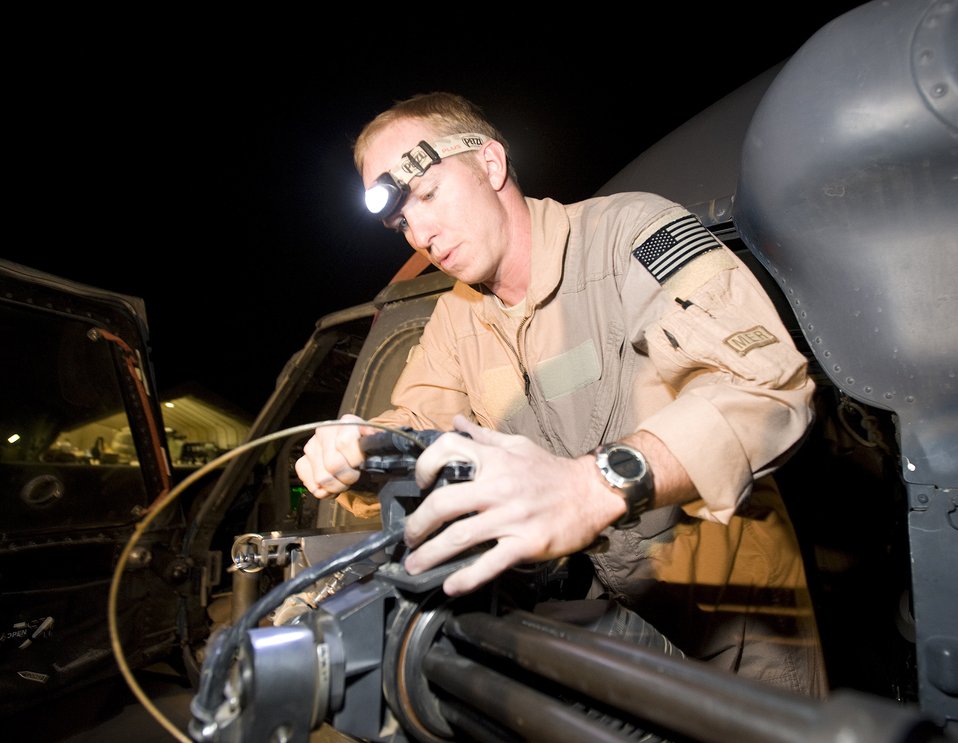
Airmen enhance Army medical evacuation mission

Staff Sgt. Sean Loose performs preflight inspections on an HH-60 Pave Hawk's mini-guns before his shift on alert Aug. 14 at Kandahar Air Base, Afghanistan. Sergeant Loose is a flight engineer for the 305th Expeditionary Rescue Squadron from Davis-Monthan Air Force Base, Ariz.